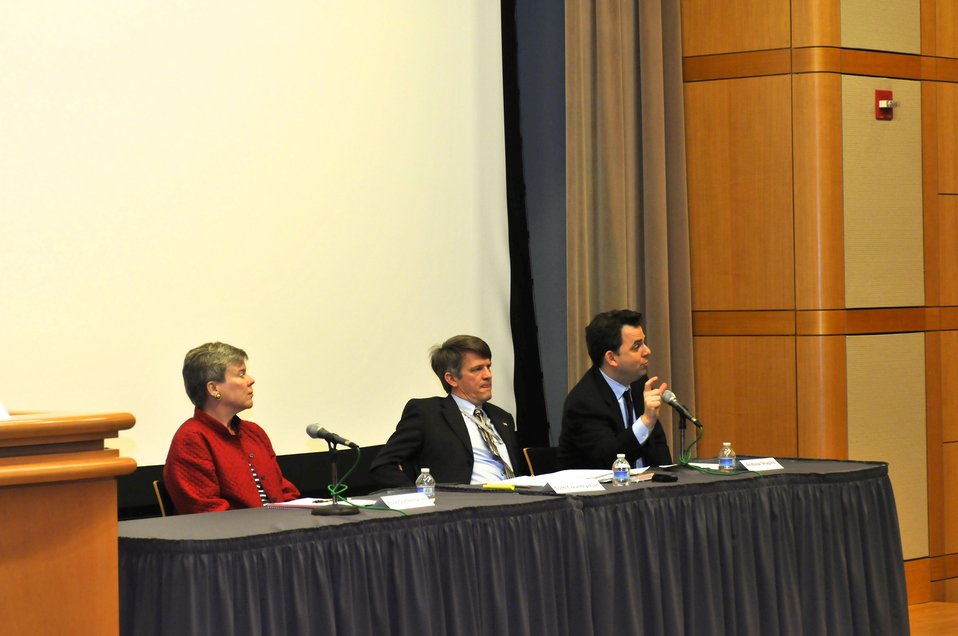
Acting Under Secretary Gottemoeller and Assistant Secretaries Countryman and Shapiro Participate in the Generation Prague Conference Panel Discussion

Acting Under Secretary of State for Arms Control and Nonproliferation Rose E. Gottemoeller, Assistant Secretary of State for International Security and Nonproliferation Thomas M. Countryman, and Assistant Secretary of State for Political-Military Affairs Andrew Shapiro participate in the Generation Prague Conference panel discussion at the U.S. Department of State in Washington, D.C., on June 4, 2012.